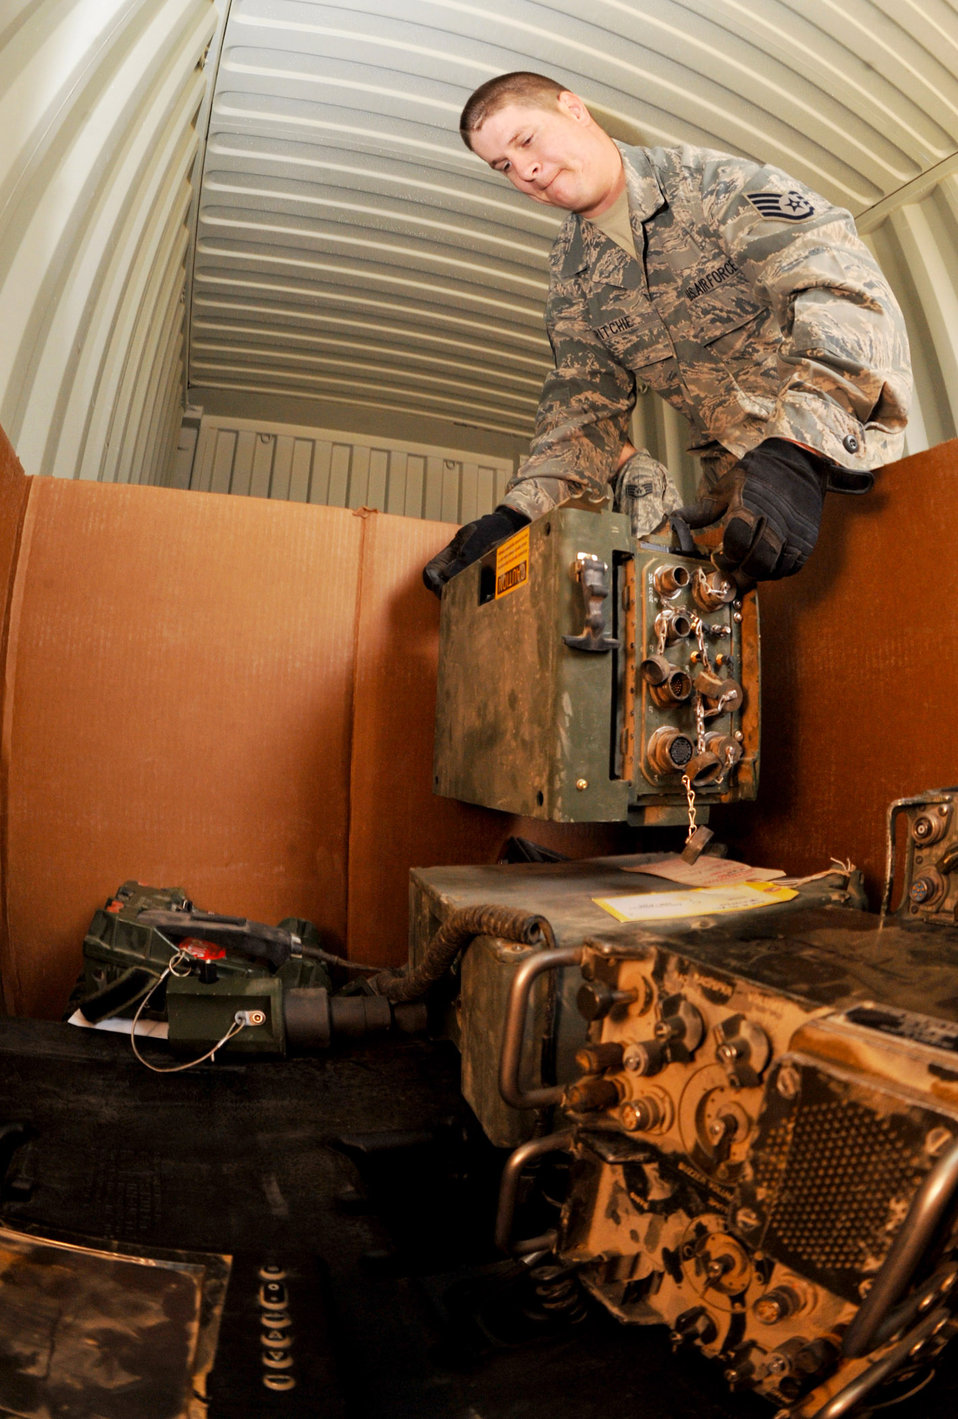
RPAT Airmen

Staff Sgt. Tristan Ritchie places a turned-in piece of equipment into a bin Jan. 29, 2011, on Contingency Operating Base Speicher, Iraq. Sergeant Ritchie is the non-rolling stock NCO in charge for COB Speicher's redistribution property assistance team. The non-rolling stock section is the collection point for items that are found on the installation.